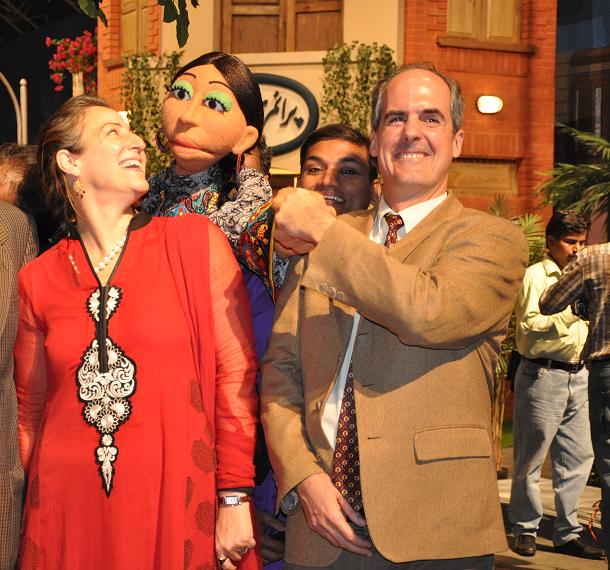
Ted Gehr (Director USAID Punjab) with Sim Sim Hamara character 'Rani' at the launch.